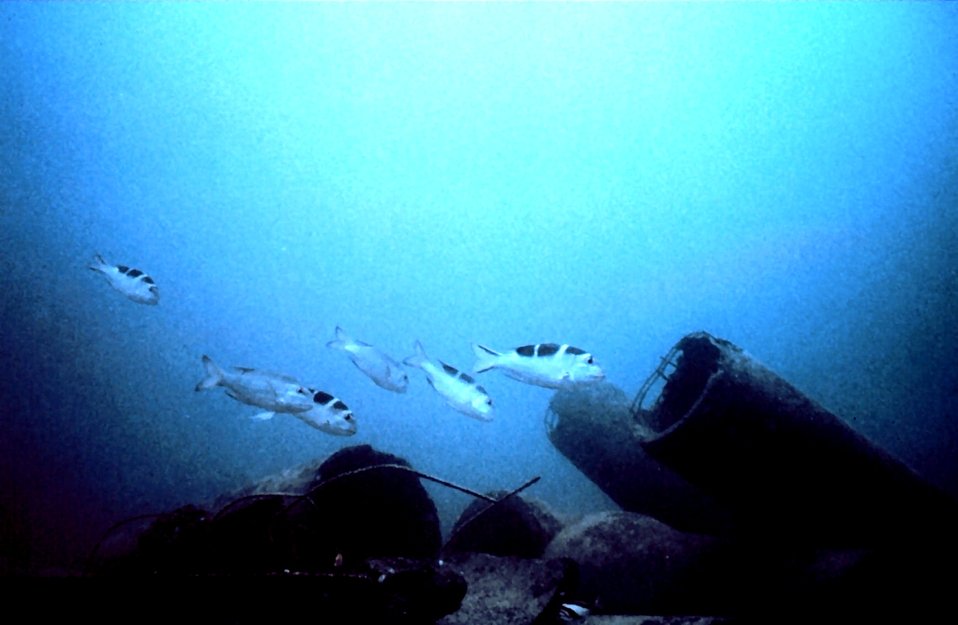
A typical school of the sparid, (Monotaxis grandoculis - Hawaiian name Mu). This fish primarily eats molluscs.